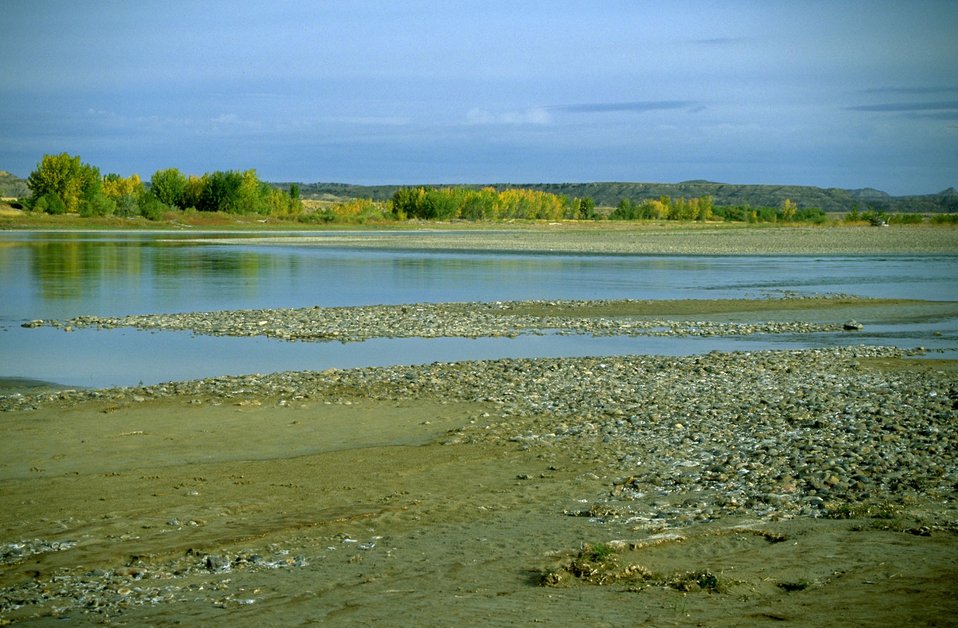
Gravel banks along the Yellowstone River